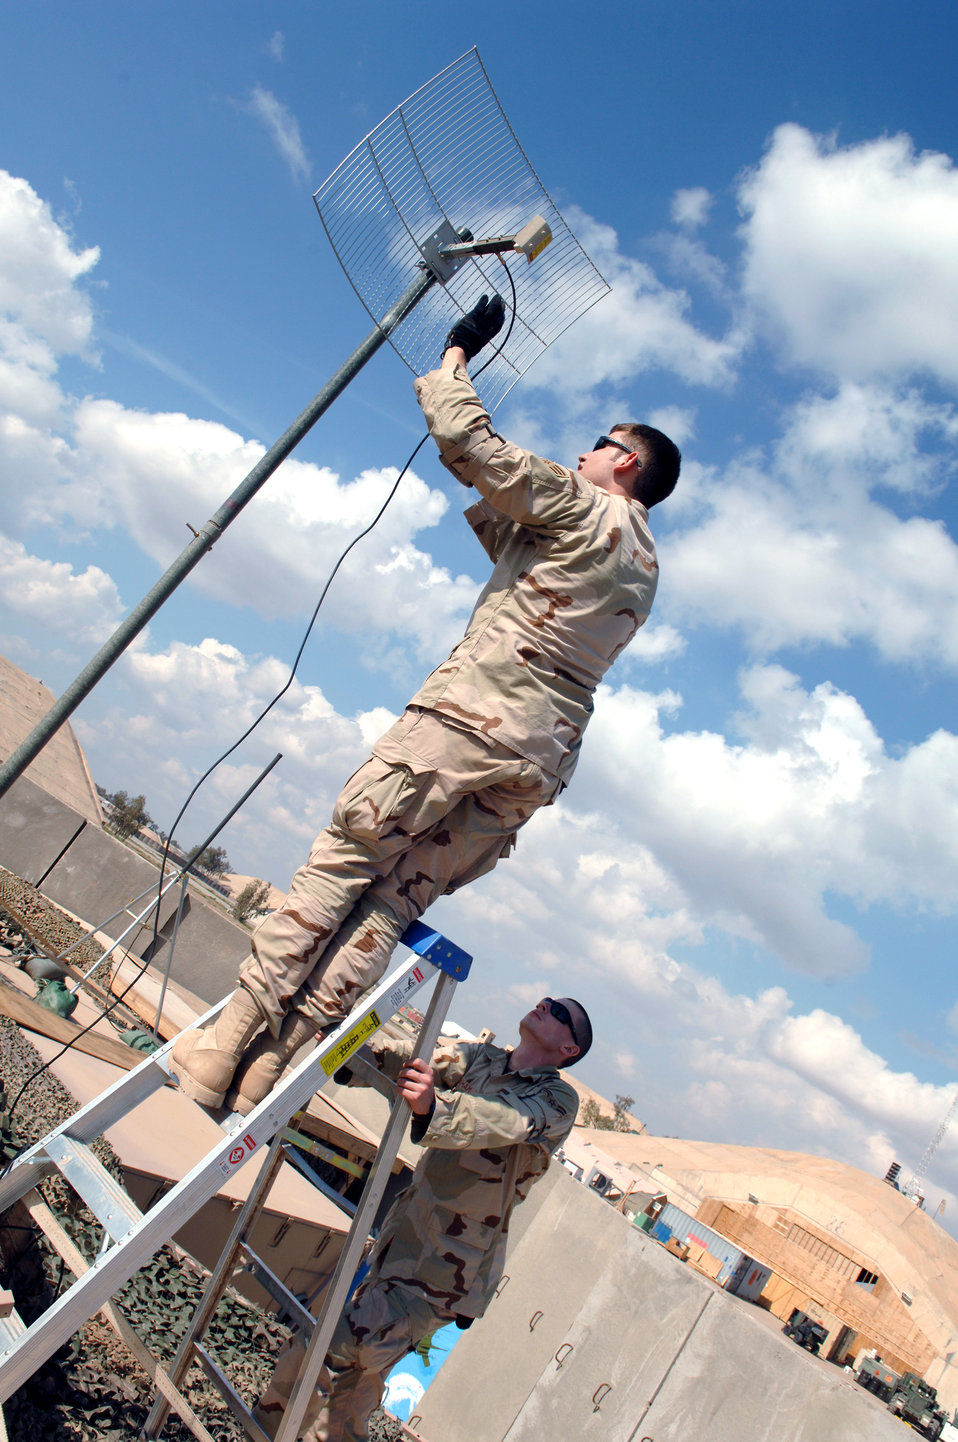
Can you hear me now?

Senior Airman Ricardo Reveles and Airman 1st Class Sven Bickham install an antenna and align a satelite dish for the best signal Feb. 17 at Balad Air Base, Iraq. The Airmen are 332nd Expeditionary Communications Squadron satelite communication journeyman and support 50 installations in the region.